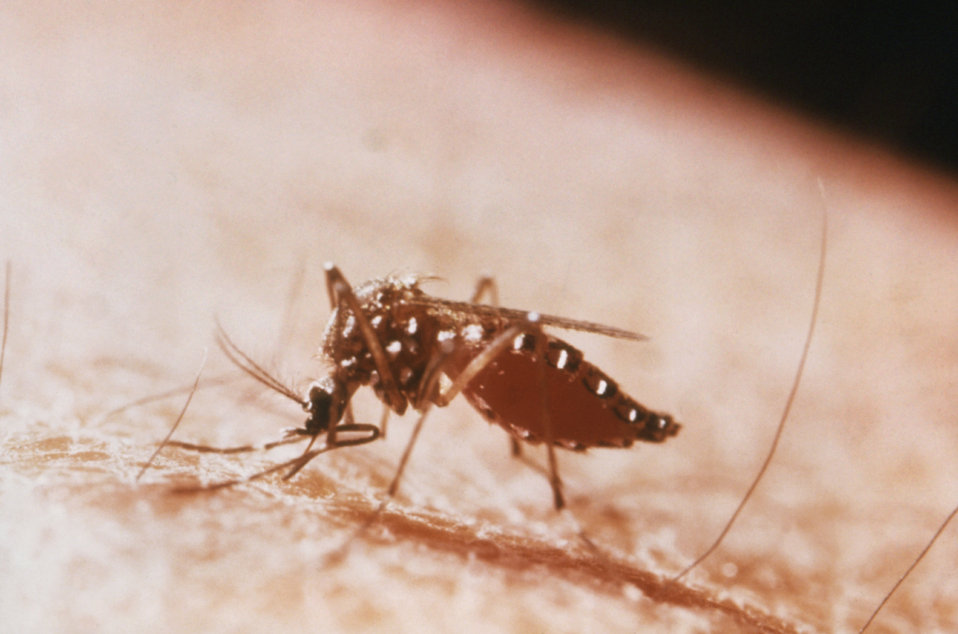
This image depicts an enorged Aedes aegypti mosquito feeding on a human host.